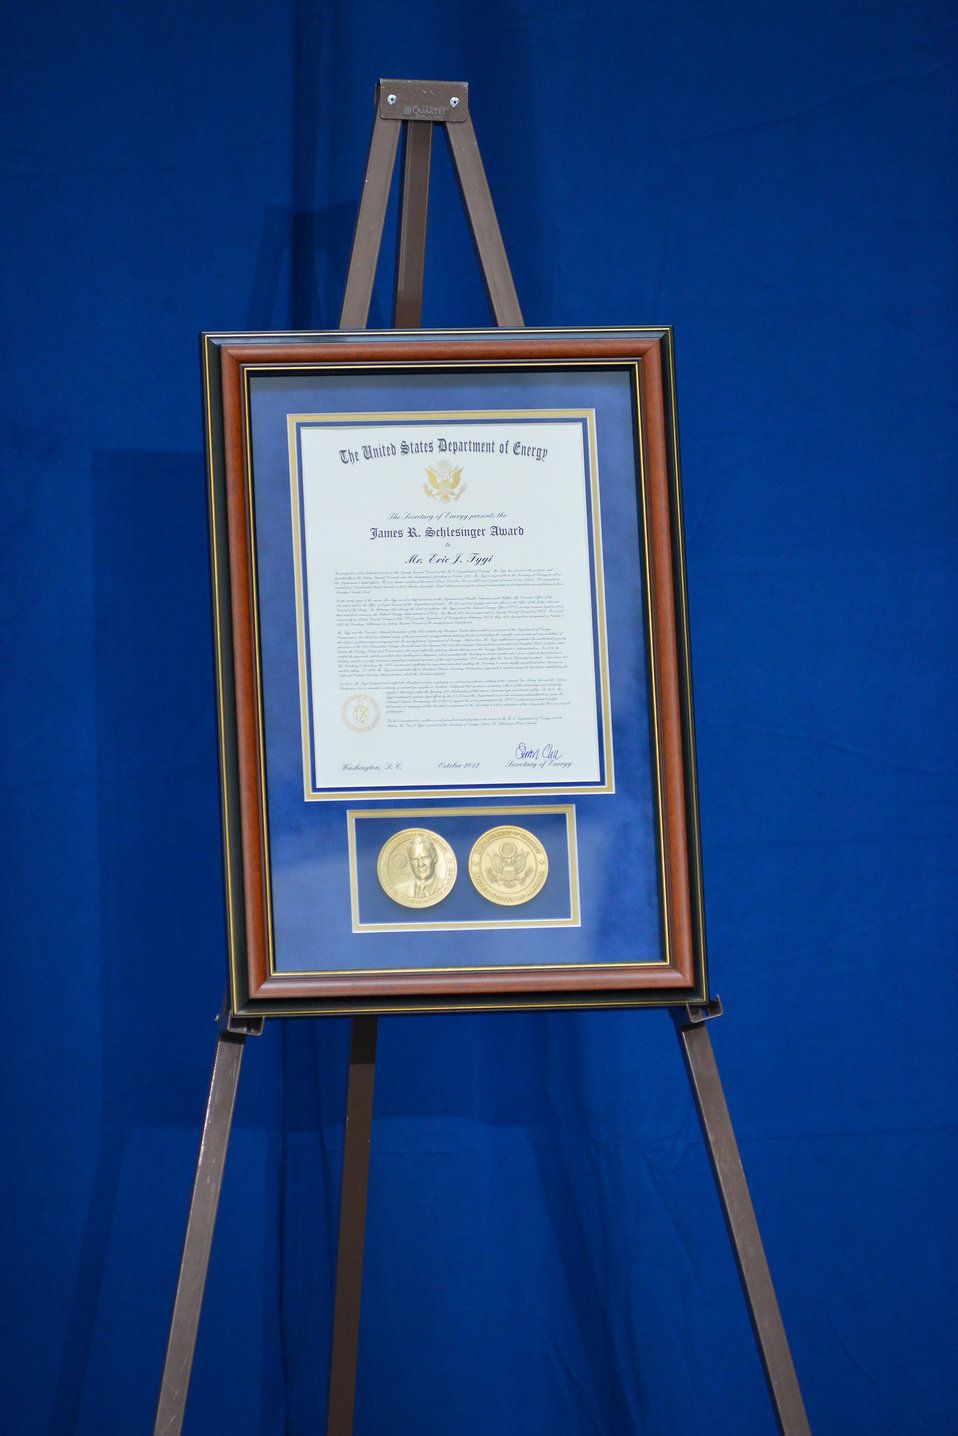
Schlesinger Award

The Schlesinger award represents the highest non-monetary level of recognition an employee or contractor can receive in the Department. It is bestowed upon one individual each year whose outstanding performance is responsible for contributions of national importance or for affecting significant improvement to the successful implementation of the Department’s mission. The award recipient should have a record of consistently demonstrating outstanding leadership in public service and should exhibit the highest levels of integrity, professionalism, and dedication throughout their service to the Department of Energy.